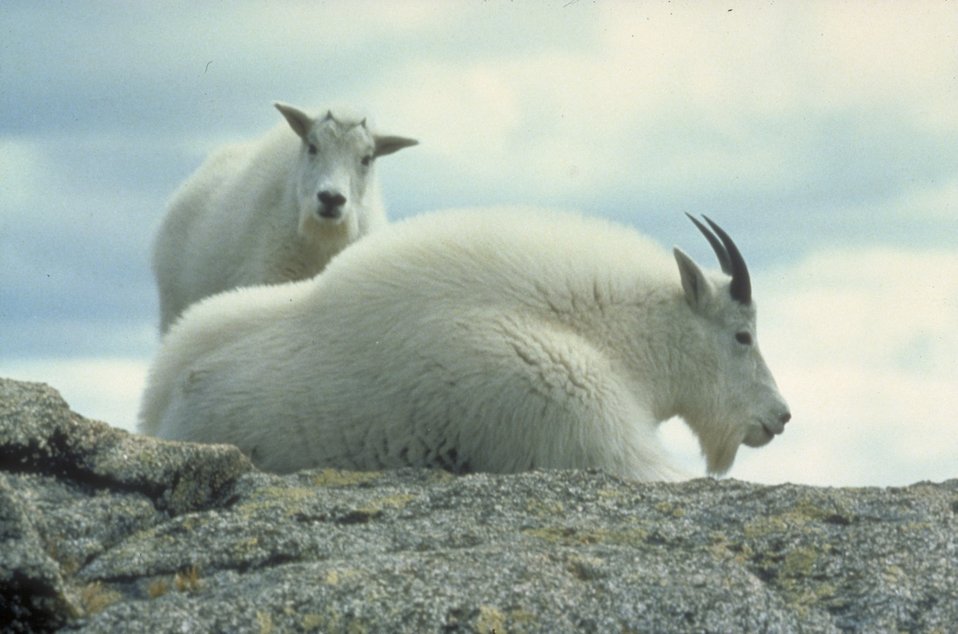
Mountain goats